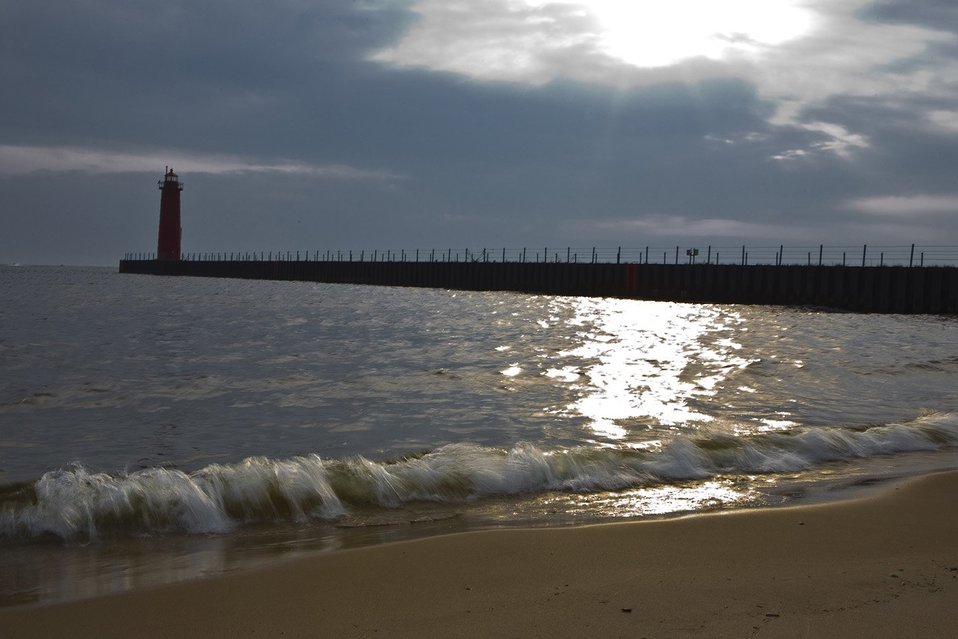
Muskegon Lighthouse